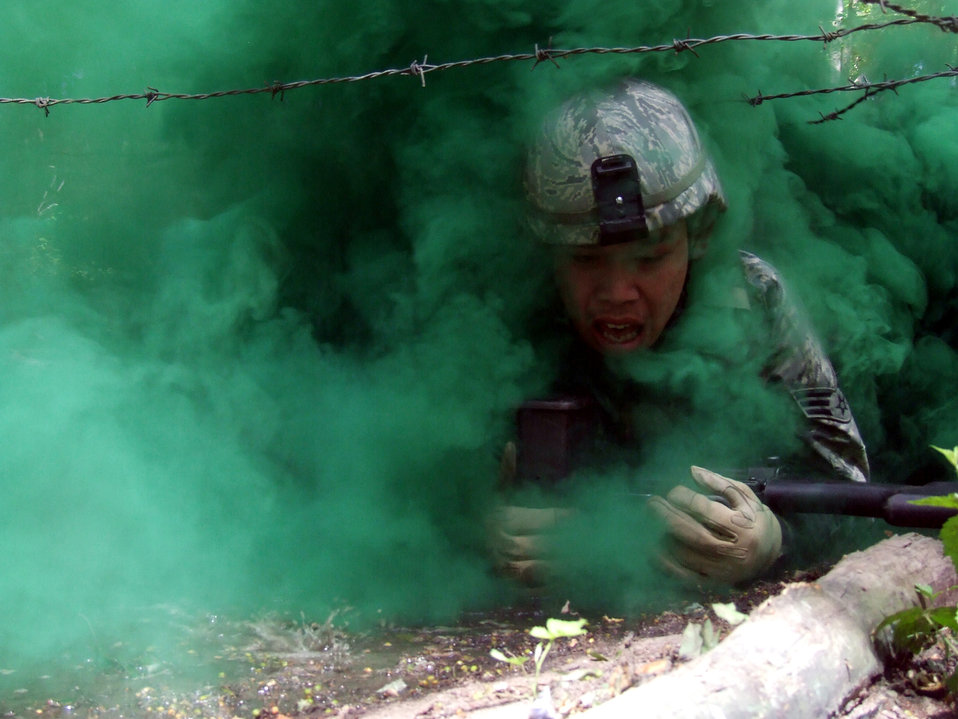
Warriors play

A student in the Air Force Phoenix Warrior Training Course participate in a combat first aid class June 19 at Fort Dix, N.J. The course is taught by the Air Force Expeditionary Center's Expeditionary Operations School and 421st Combat Training Squadron insturctors and prepares security forces Airmen for upcoming deployments.